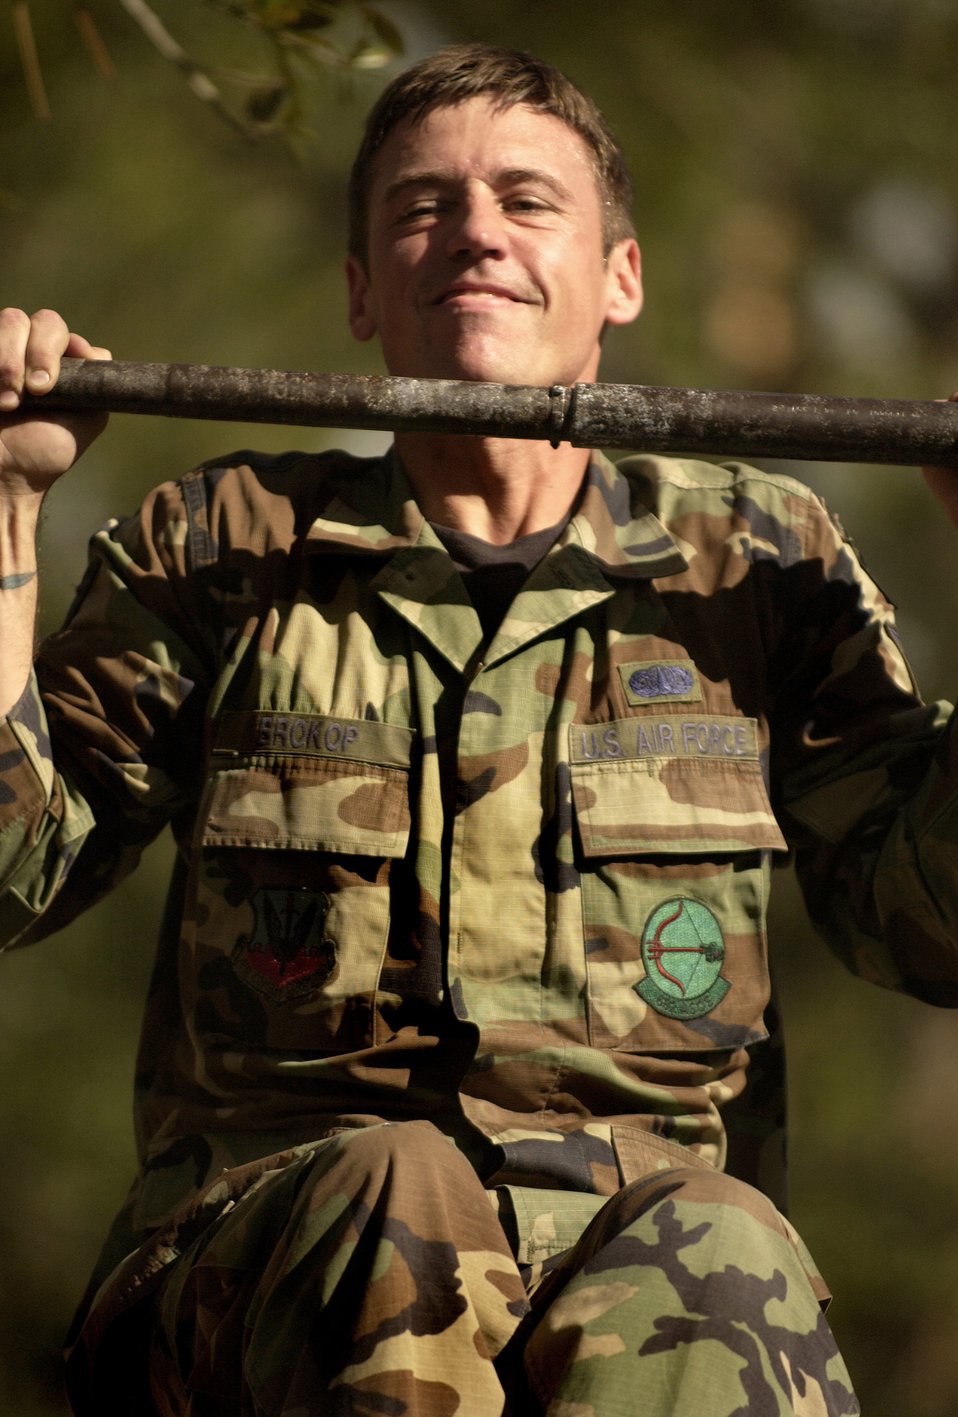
Up one, up two

AVON PARK, Fla. -- Tech. Sgt. William Brokop performs a pull-up at the start of the obstacle course during Dragon Challenge 04 on Dec. 5. Tech. Sgt. Brokop is assigned to the 682nd Air Support Operations Squadron at Shaw Air Force Base, S.C.